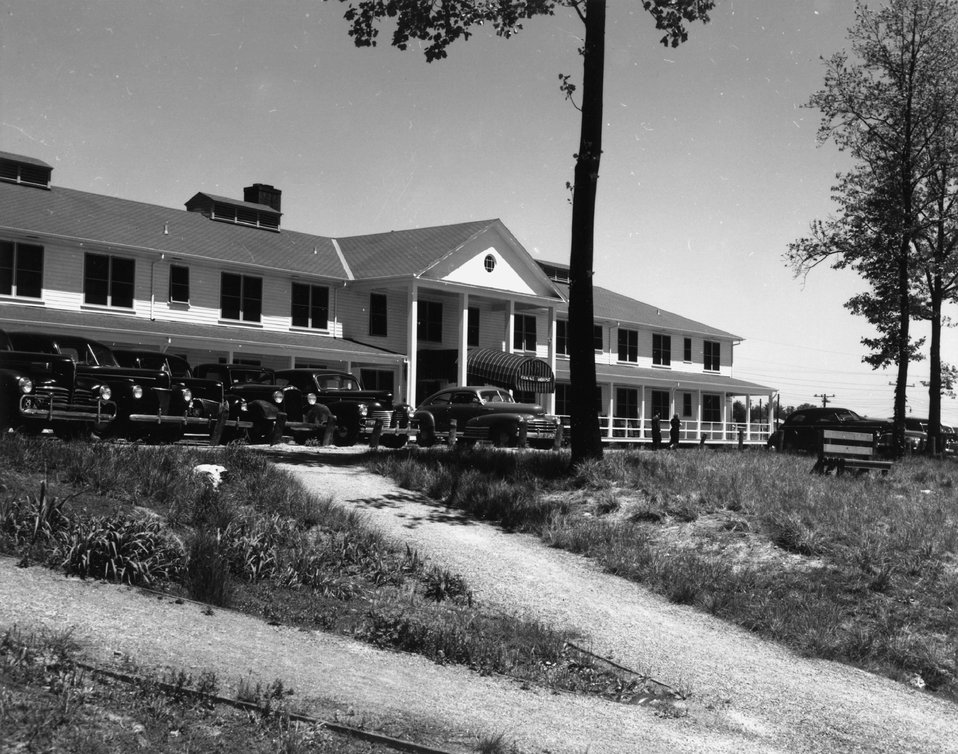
Guest house. c. 1947